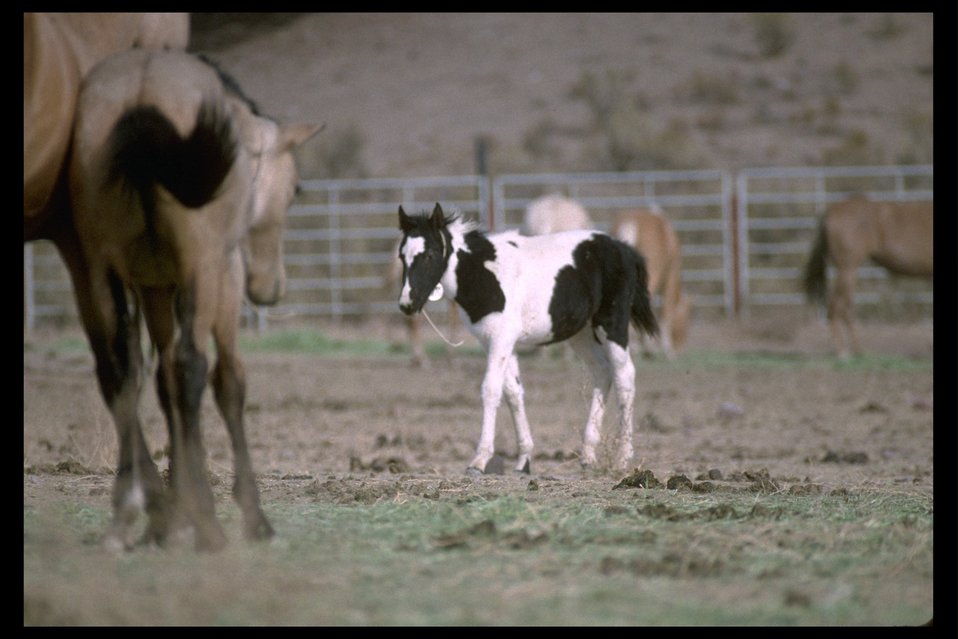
Black and White Pinto foal at Burns Wild Horse Corrals in South Steens Horse Management Area.